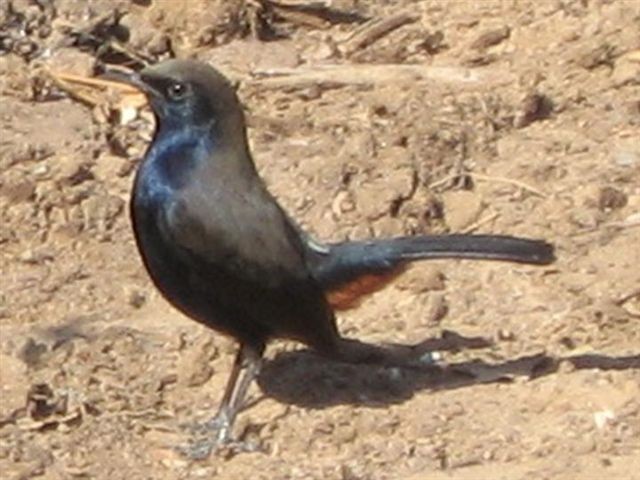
Uploaded by request of Jyotsna Kapadia.

Taken at Kutch, India.

Regarding the role played by each species from diverse biosphere, there are three aspects of our knowledge. First one is that, we know what we know; secondly, we know what we don't know; finally, the third aspect is that, we don't know what we don't know.